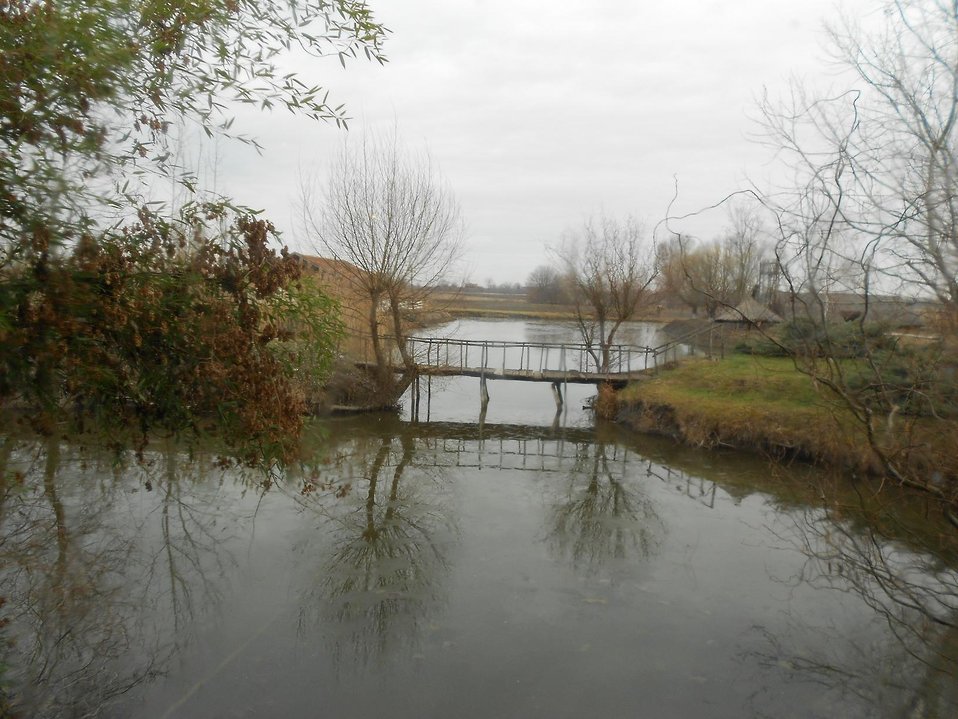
Српски / srpski: Драган Цветковић сопствена слика Палић 2012